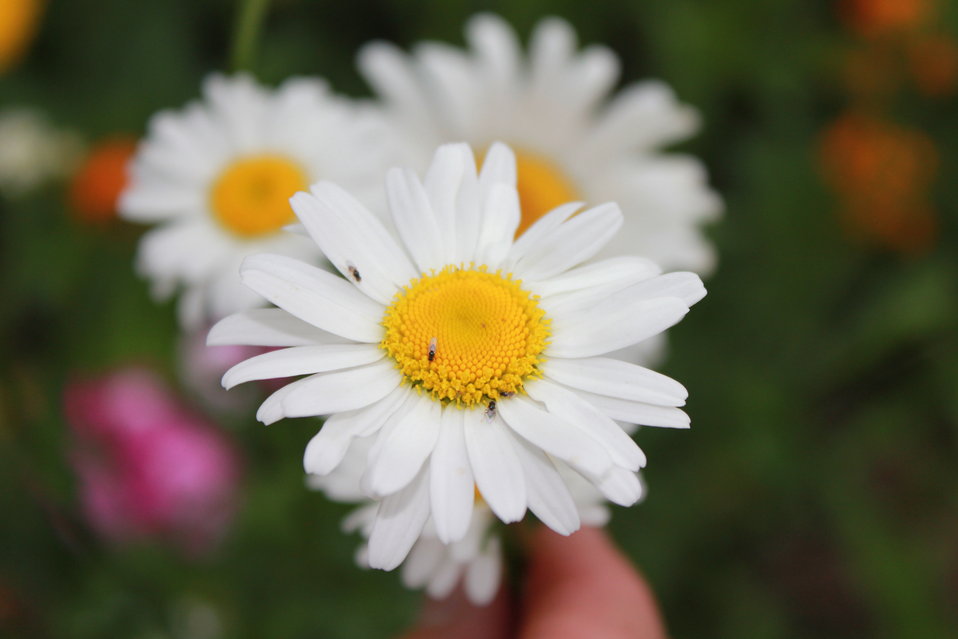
Daisies in the Pollinator Garden at the Northeast Regional Office, Hadley, MA.